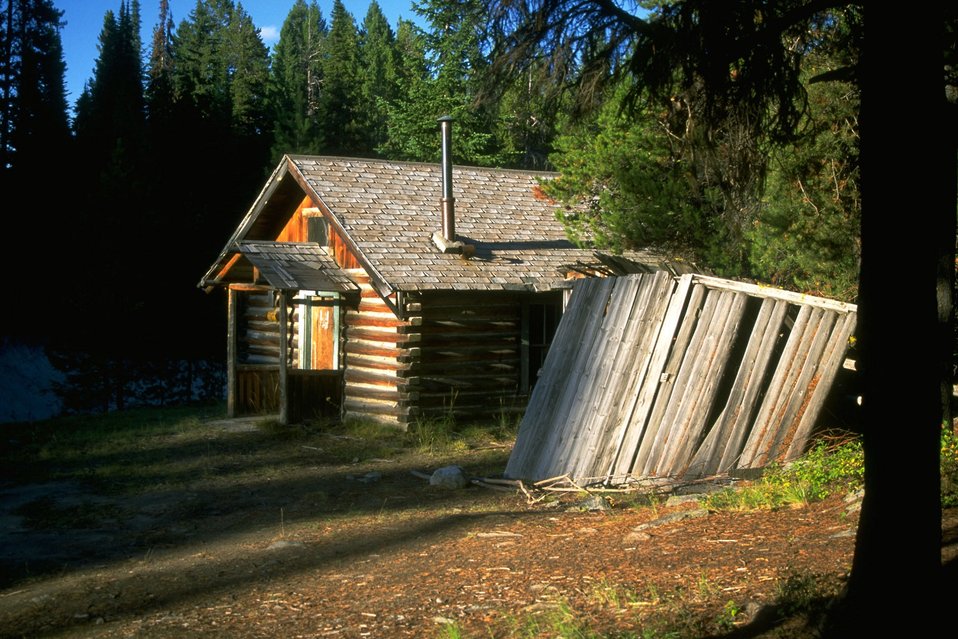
Garnet Back Country Byway--old fire warden's cabin